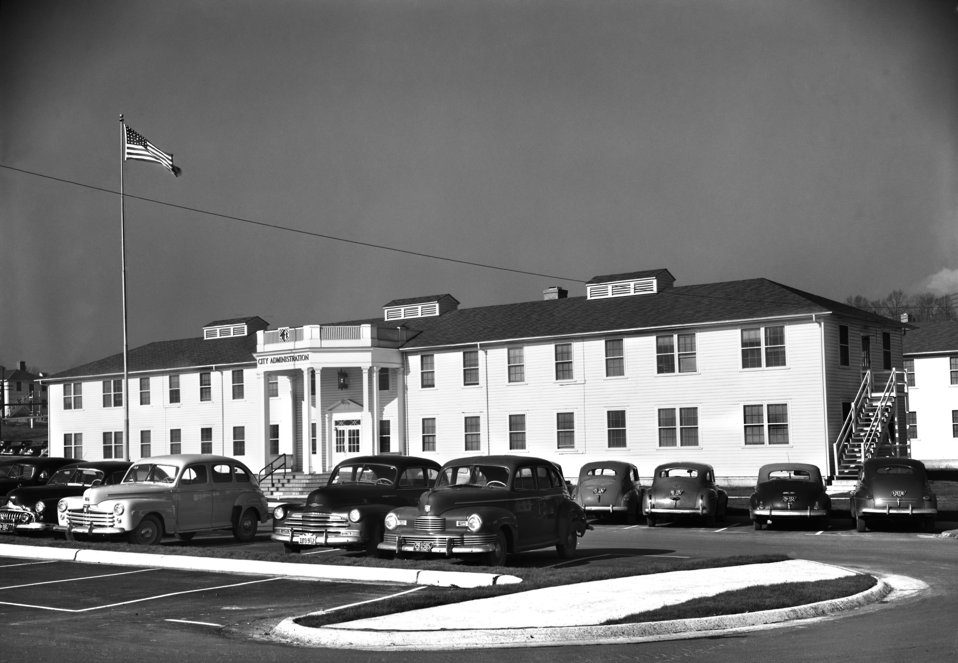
City Administration Building Oak Ridge 1948

4343a DOE photo Ed Westcott 1-6-1948 Oak Ridge Tennessee